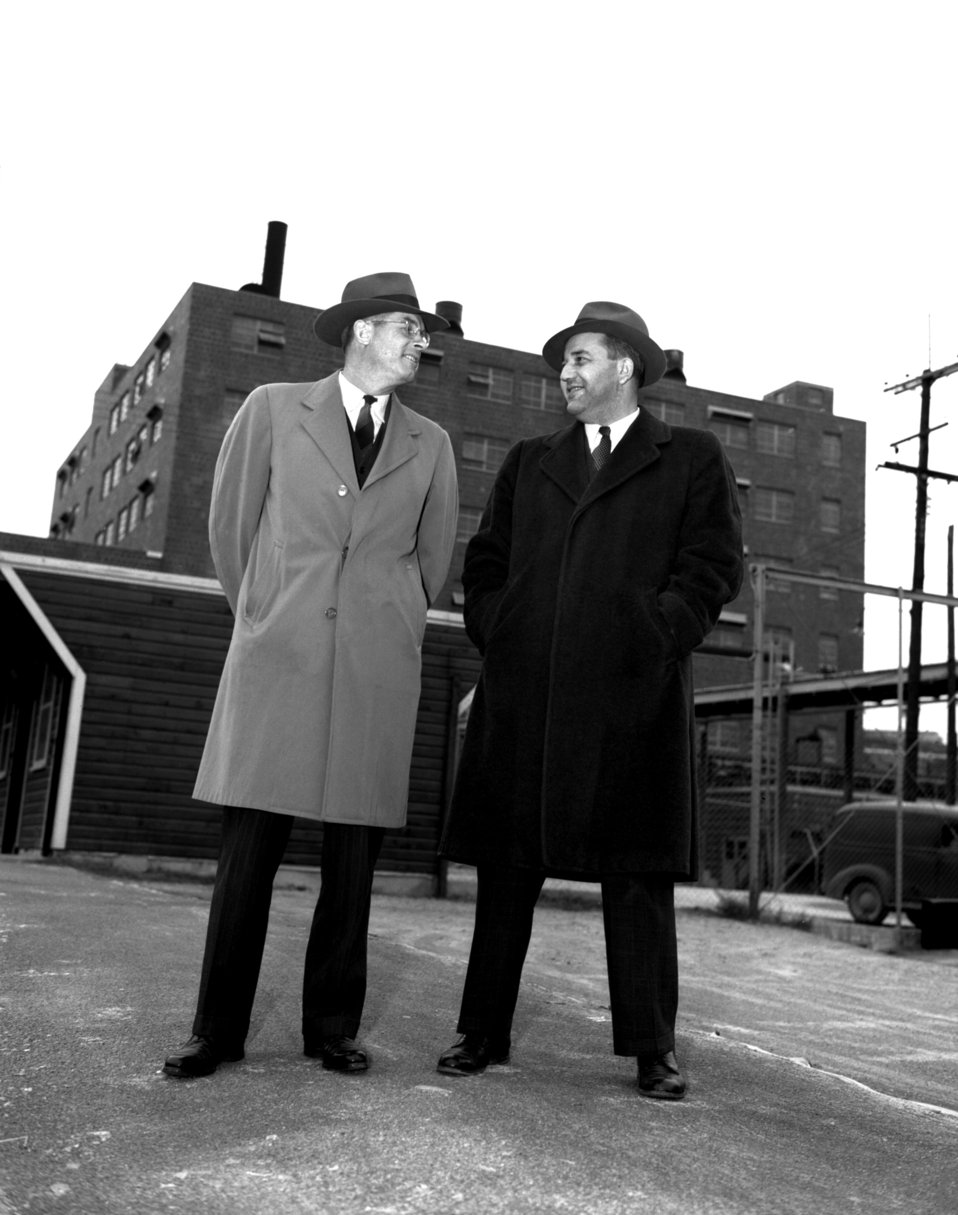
Dr. Konklin and Clark Center Oak Ridge

3335-3a DOE photo Ed Westcott 3-10-1947 Oak Ridge Tennessee